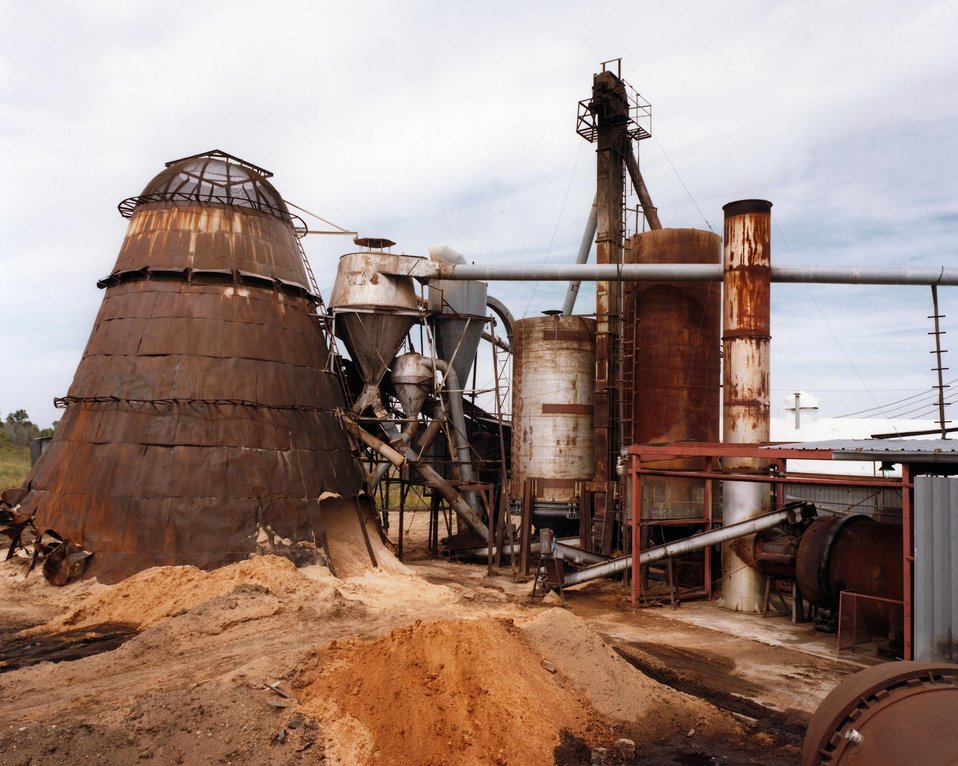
NEWER STORAGE BINS AND ELEVATOR FOR THE SAWDUST AND WOOD CHIPS (R) AT THE A&P PALLET MFG. PLANT.

LOCALLY AVAILABLE BIOMASS, IN THIS CASE SAWDUST AND WOOD CHIPS FROM A PALLET MANUFACTURING PROCESS, IS PROCESSED TO PRODUCE MORE USABLE FORMS OF BIOMASS. THE PROCESS AT THIS PLANT PRODUCES CHARCOAL FOR MARKETING AND STEAM FOR A NEIGHBORING RICE PROCESSING PLANT. TO THE LEFT IS THE TEEPEE BURNER AND OTHER CHIP AND SAWDUST HANDLING EQUIPMENT THAT IS NO LONGER BEING USED.